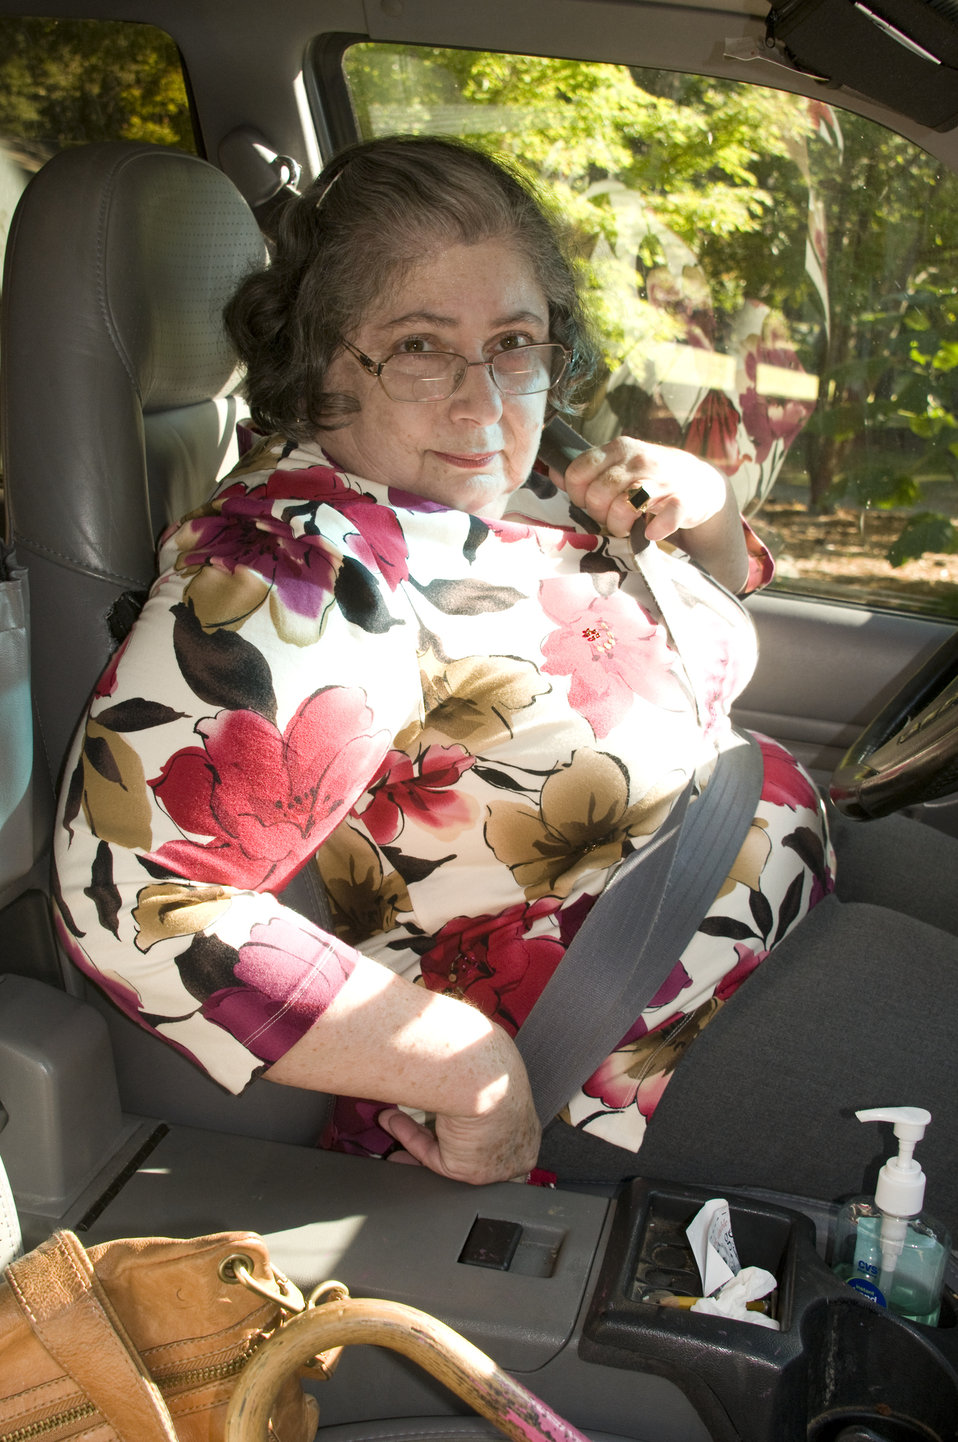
Finally, after having loaded her luggage into her vehicle's back seat area, this woman, who is a rheumatoid arthritis patient, had entered the automobile, and had settled herself in the driver's seat. She'd placed her walking cane and handbag on the passenger seat. Note her access to a pump bottle of hand sanitizer on the console to her left. In this particular image, she was in the process of securing, and adjusting her safety belt.